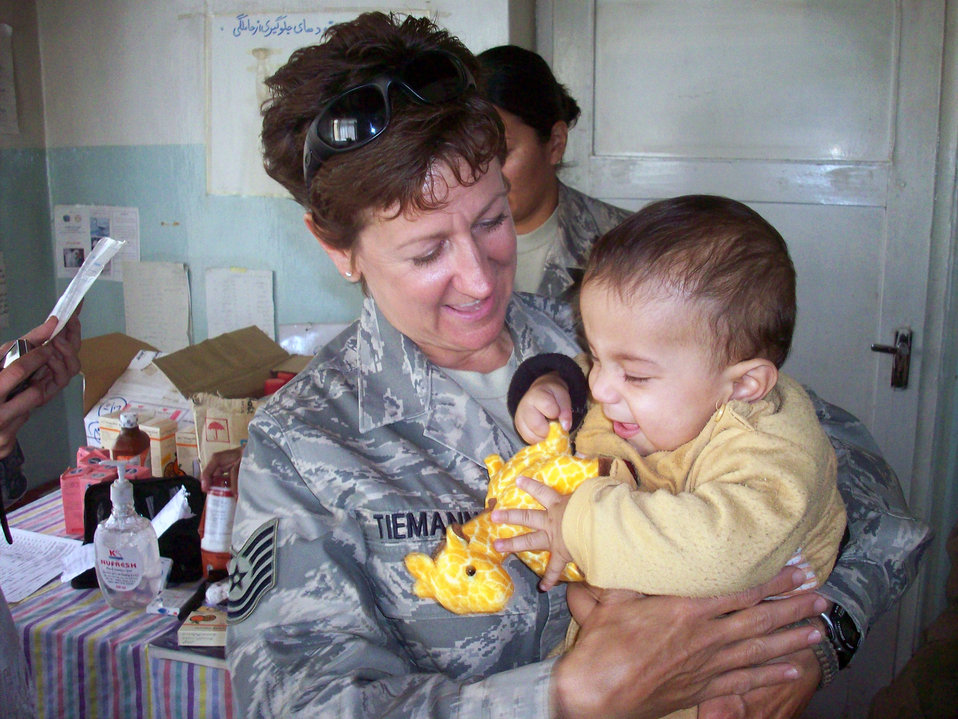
Med team augments Afghan doctors, builds treatment capacity

Tech. Sgt. Dawn Tiemann holds a baby during a medical engagement in Panjshir province. Doctors in Panjshir treated 473 Afghan patients in two districts, Rohka and Shutol, with the Panjshir PRT medical team assisting. Sergeant Tiemann is a Panjshir Provincial Reconstruction Team medical technician.